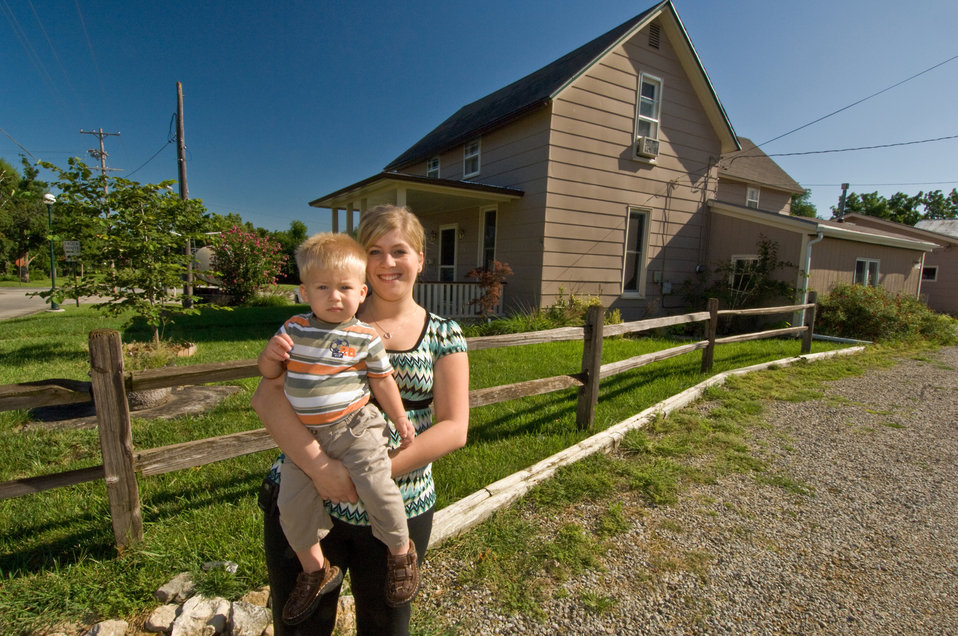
Jennifer and Hunter Neal stand in front of their home in Hiawatha, Kansas on August 20, 2009. Neal was able to purchase her home with money from the U. S. Department of Agriculture (USDA) Rural Development (RD) loan guarantee program and money allocated through the American Recovery and Reinvestment Act of 2009 (ARRA).